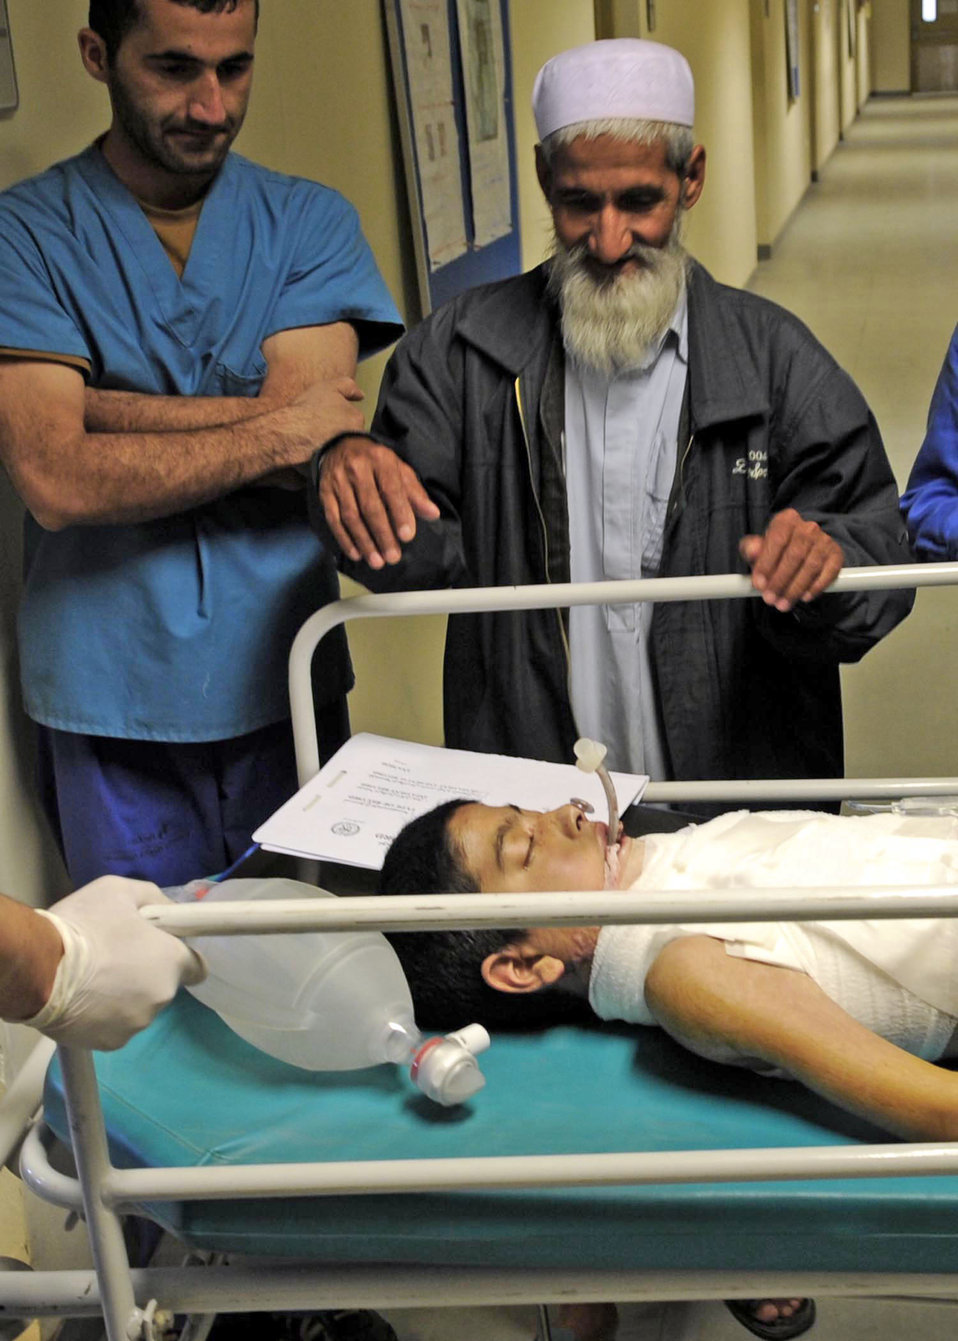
American, Afghan docs begin surgical process on young burn victim

Abdul Ghafer looks at his son Abdul Rahman after making it through five hours of surgery March 1, 2010 at the Kandahar Regional Military Hospital in Afghanistan.